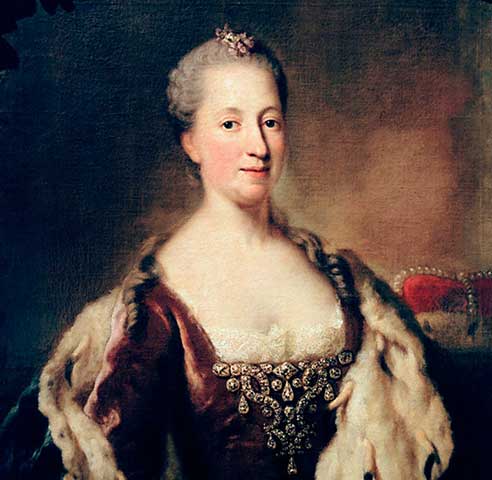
1760 maria anna von pfalz sulzbach, princess of bavaria